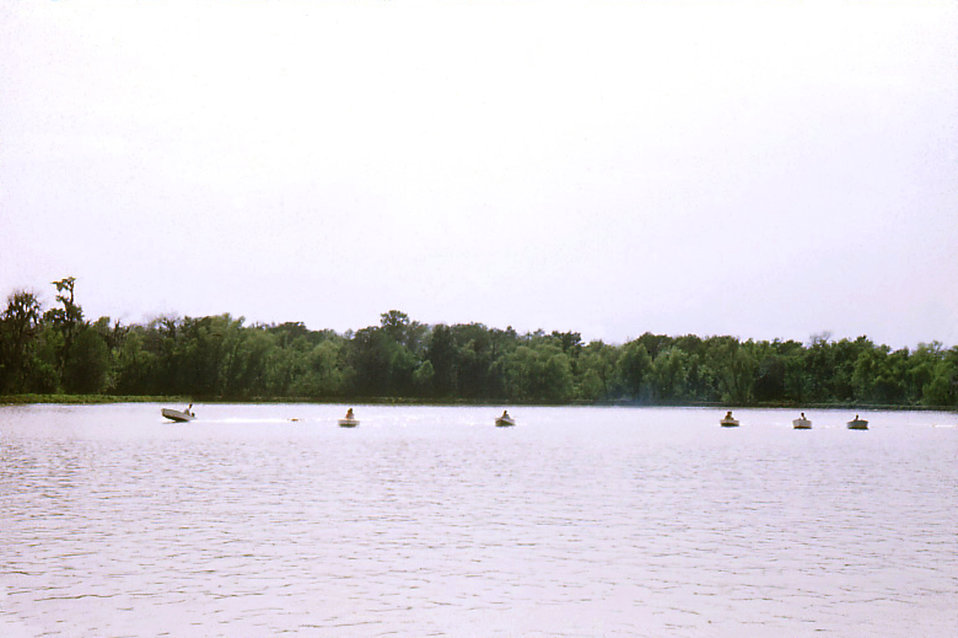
This historic image depicted a number of Carville, Louisiana Leprosarium patients, motor boating out on Lake Johansen on a beautiful day, for some of the patients owned boats while at the hospital during their treatment. Lake Johansen, which measures approximately 500 feet in length, by 250 feet wide, was named after one of the Leprosarium's Chief Medical Ofiicers, Dr. Frederick A. Johansen.